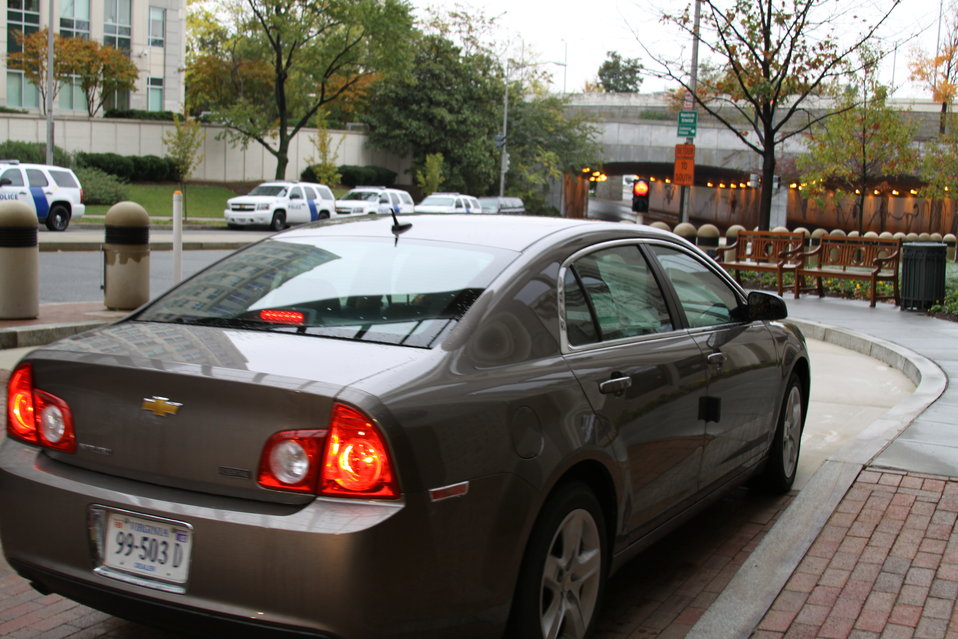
FCC Official Vehicle Tour